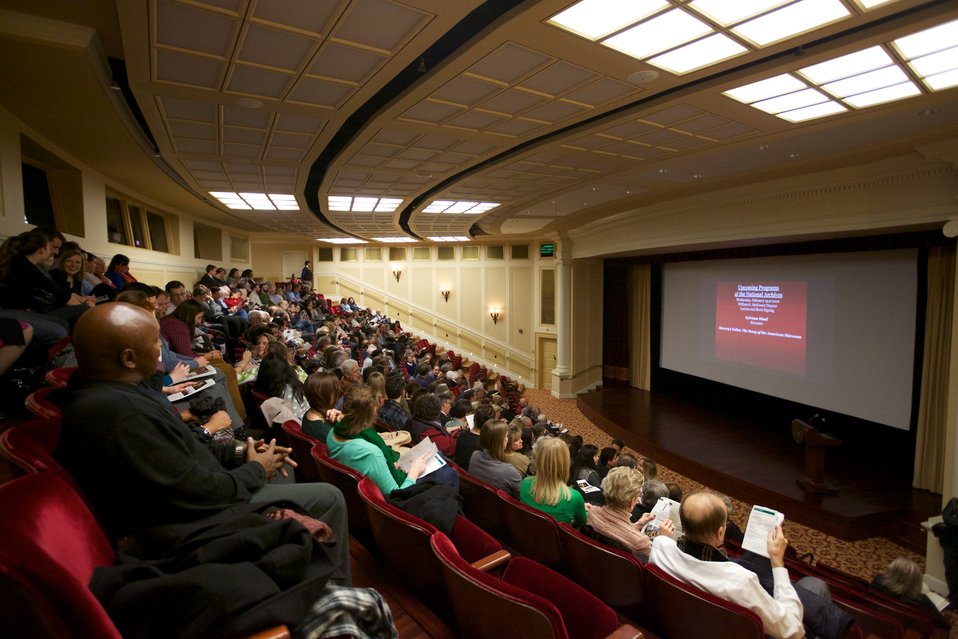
Monuments Men Public Screening; Audience fills the theater before the event